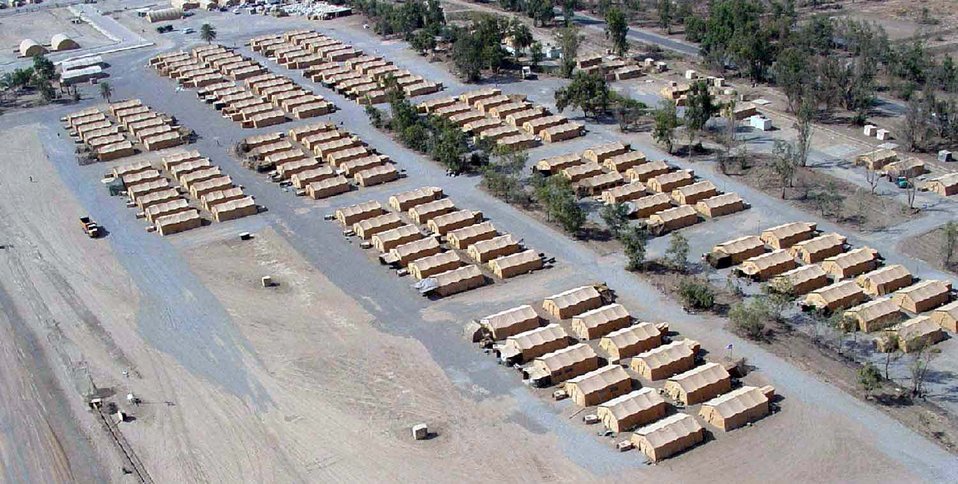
Tent town

OPERATION IRAQI FREEDOM -- The 447th Air Expeditionary Groups set up a tent city at Baghdad International Airport. The group's job is to provide a place from which warfighters can operate.